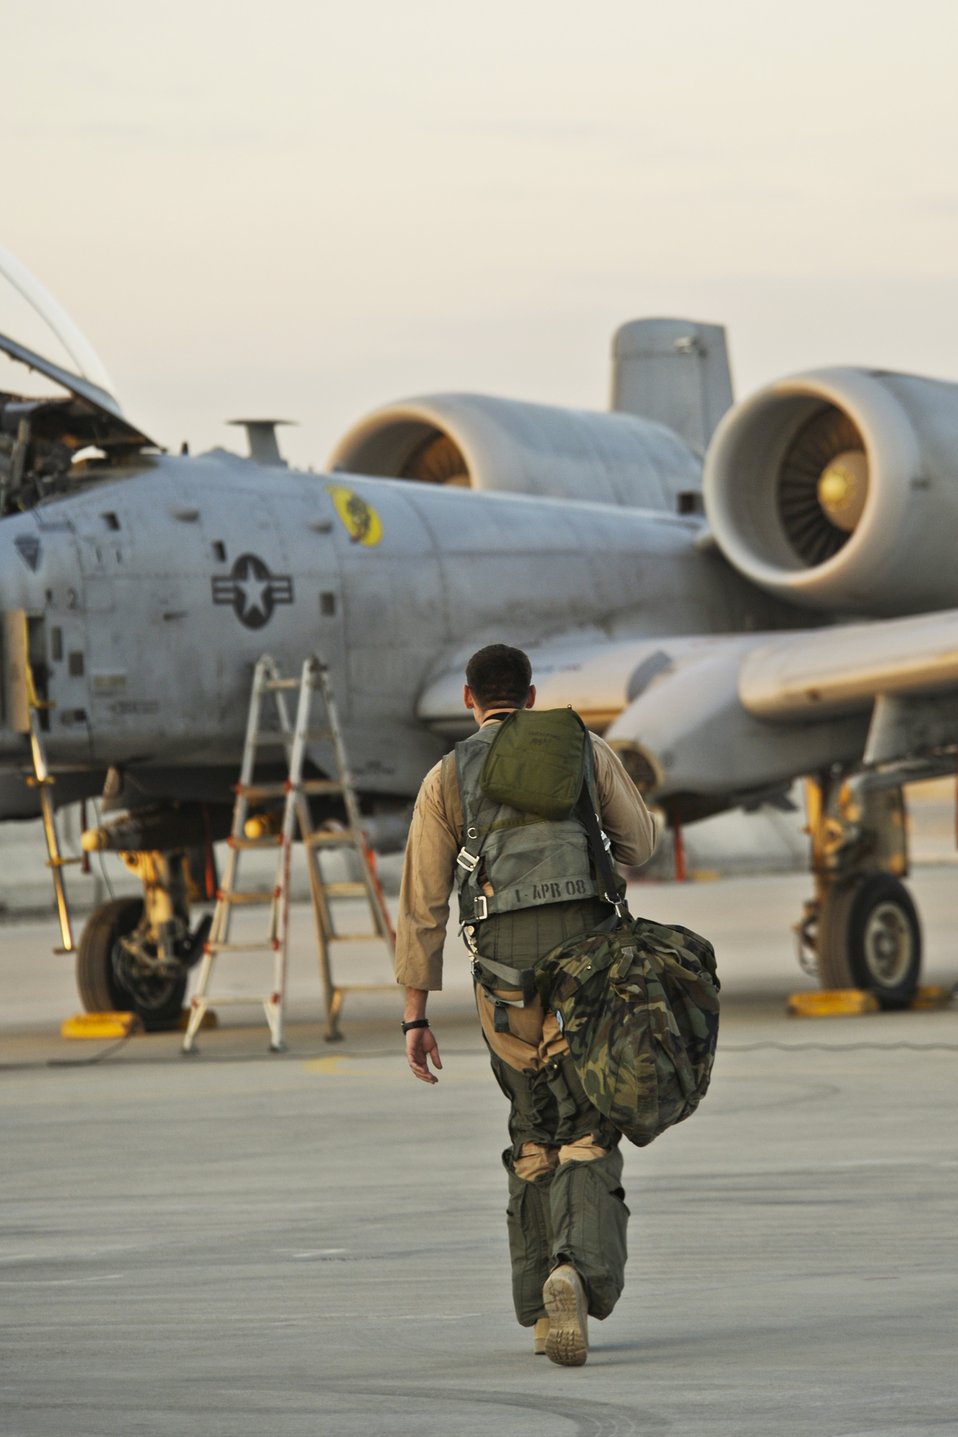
A-10 pilots prepare for mission

Capt. Richard Wilson prepares to depart on a mission at Kandahar Airfield, Afghanistan, Dec. 27, 2009. Captain Wilson is an A-10 Thunderbolt II pilot with the 354th Expeditionary Fighter Squadron.